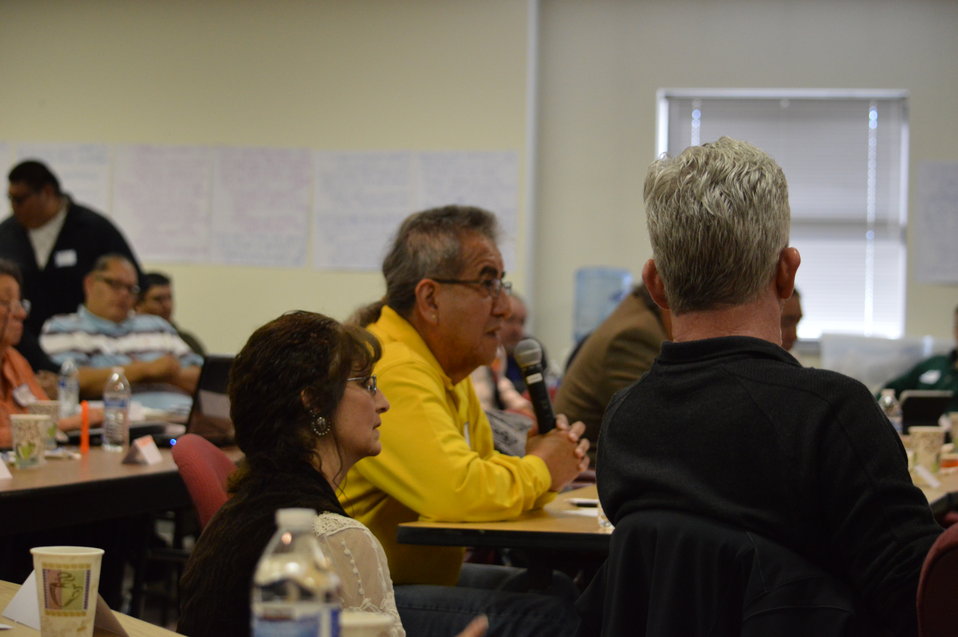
Eagle Summit III

Questions and comments at the Eagle Summit III in Denver, Colorado on March 20, 2014 at the Rocky Mountain Arsenal National Wildlife Refuge.